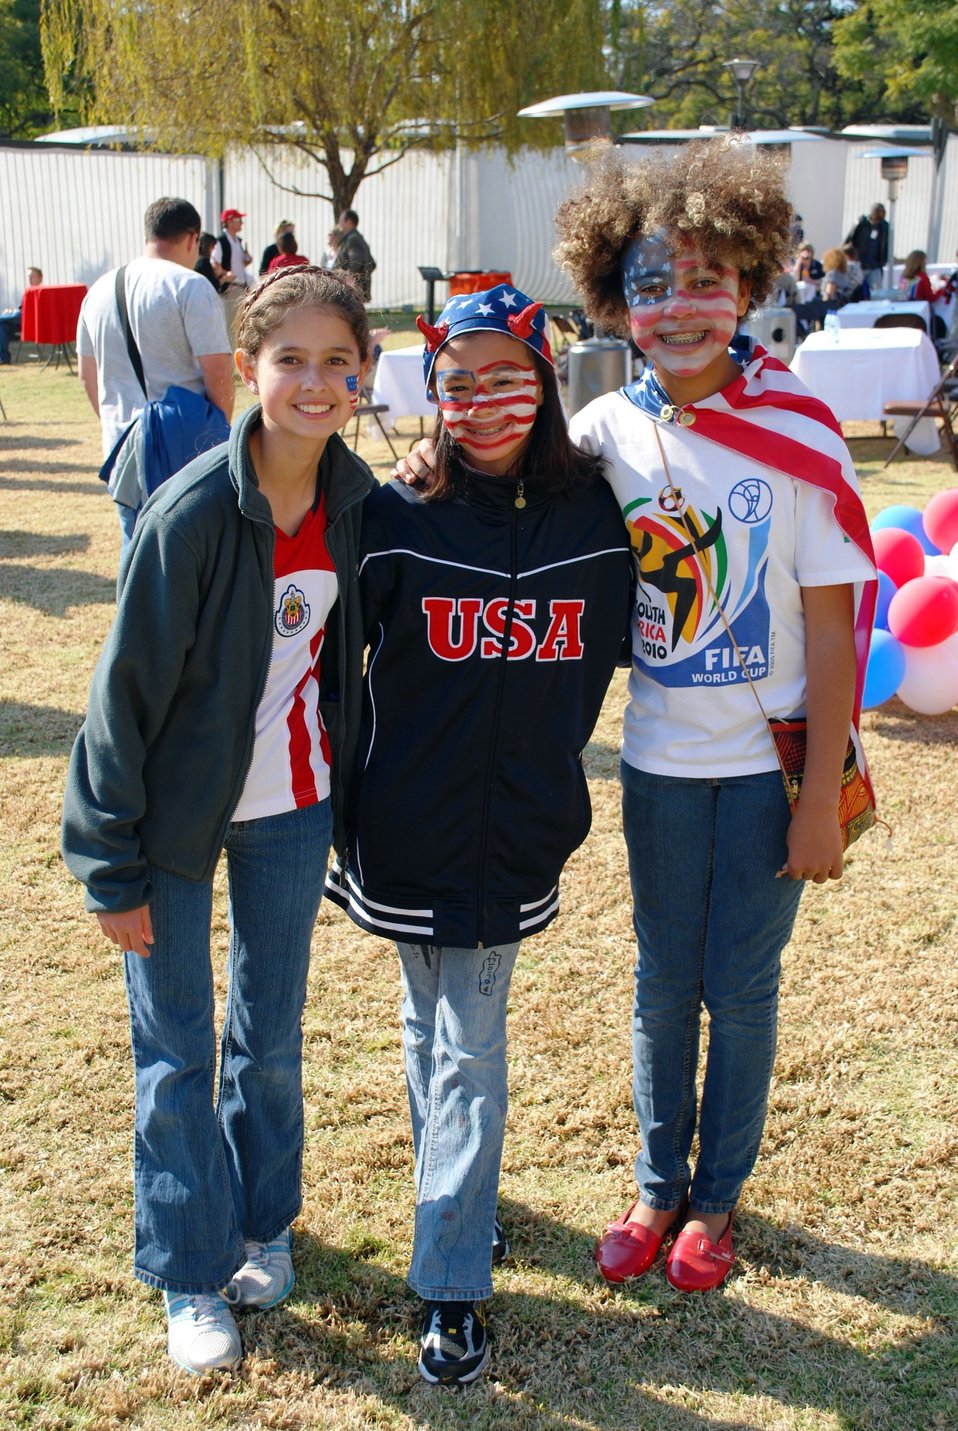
Youth fans show their team pride at the Team USA pep rally before the U.S. vs. Algeria World Cup match on June 23, 2010, in Pretoria, South Africa.